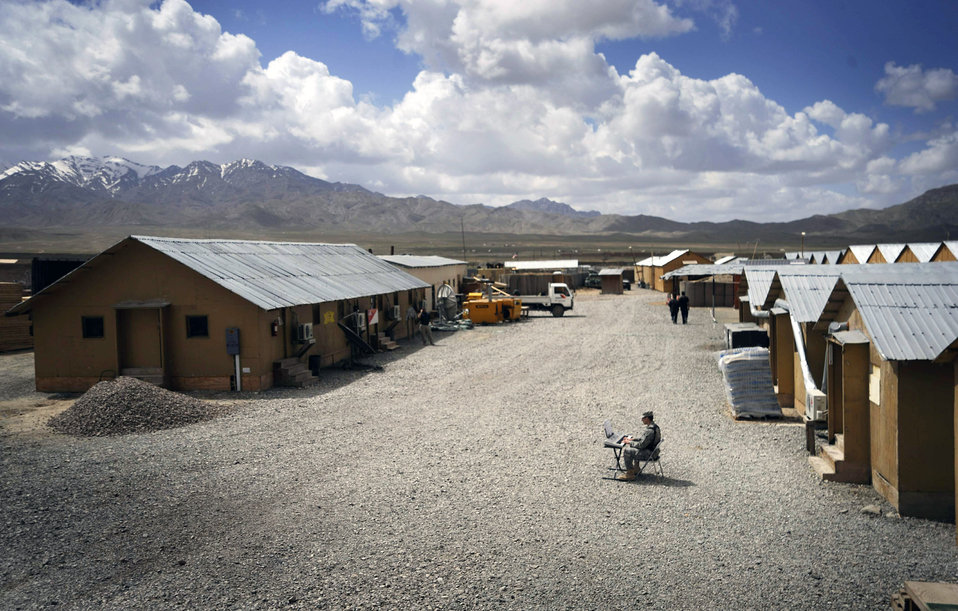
NCO brings calm over camp

Staff Sgt. Eric Began, a member of the Paktya Provincial Reconstruction Team, relaxes at Forward Operating Base Gardez by playing the piano. Sergeant Began taught himself how to play the keyboard as a way to pass time during his deployment to Afghanistan.